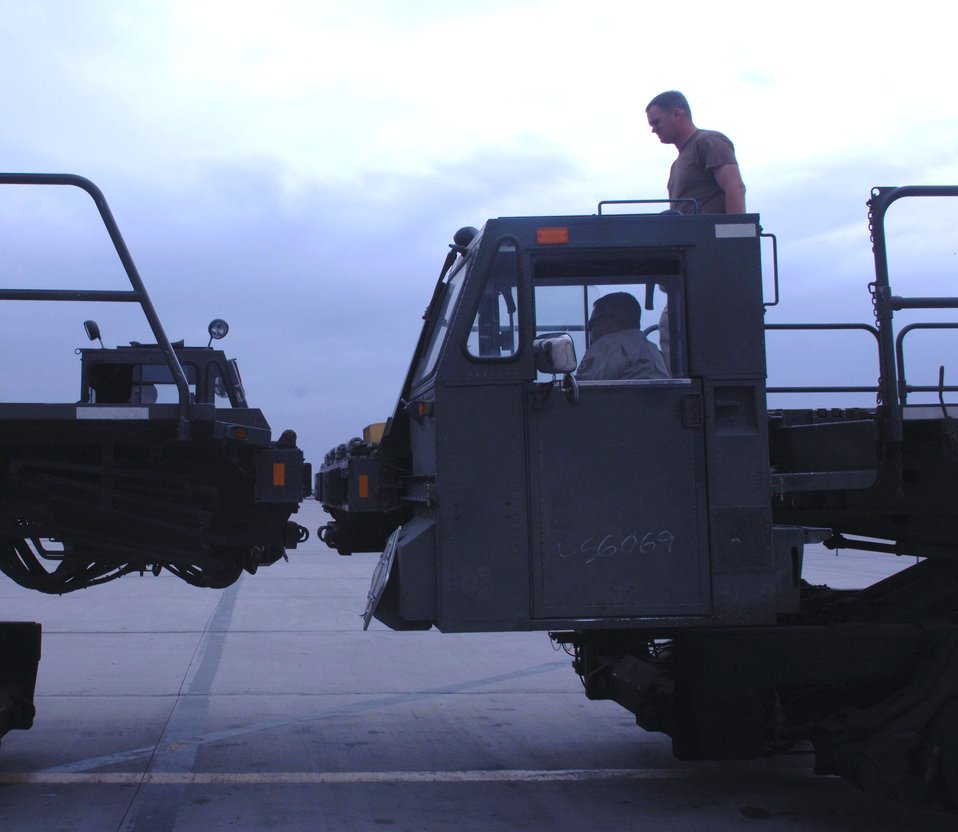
Bagram Airmen move Army Force Provider camps

Tech. Sgt. Duane Kaiser stands and guides Tech. Sgt. Luis Quiles as they line up two 60K aircraft cargo loaders for the off-loading of aircraft for Army Force Provider camps April 4 at Bagram Airfield, Afghanistan. The Airmen are with the 455th Expeditionary Logistics Readiness Squadron.